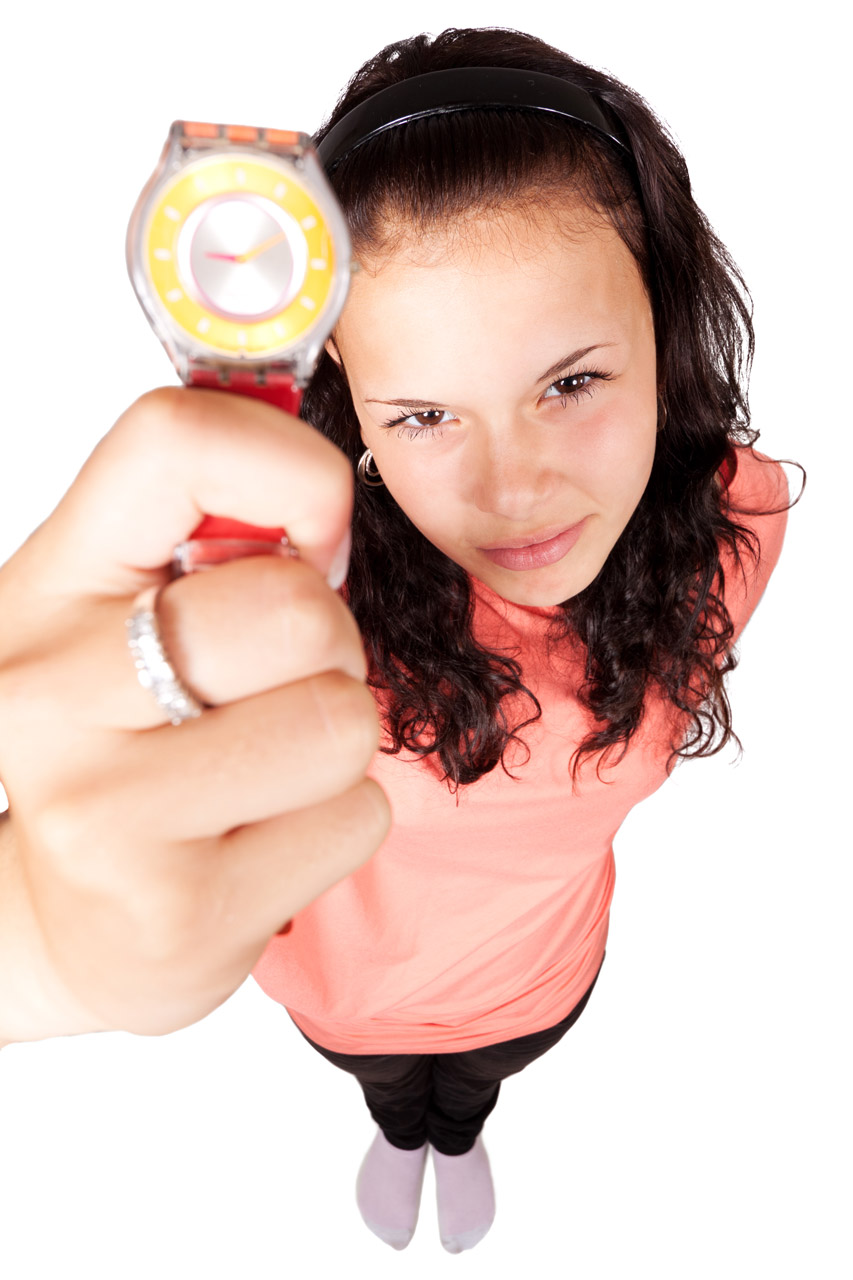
Your are late

Young woman showing her watch.